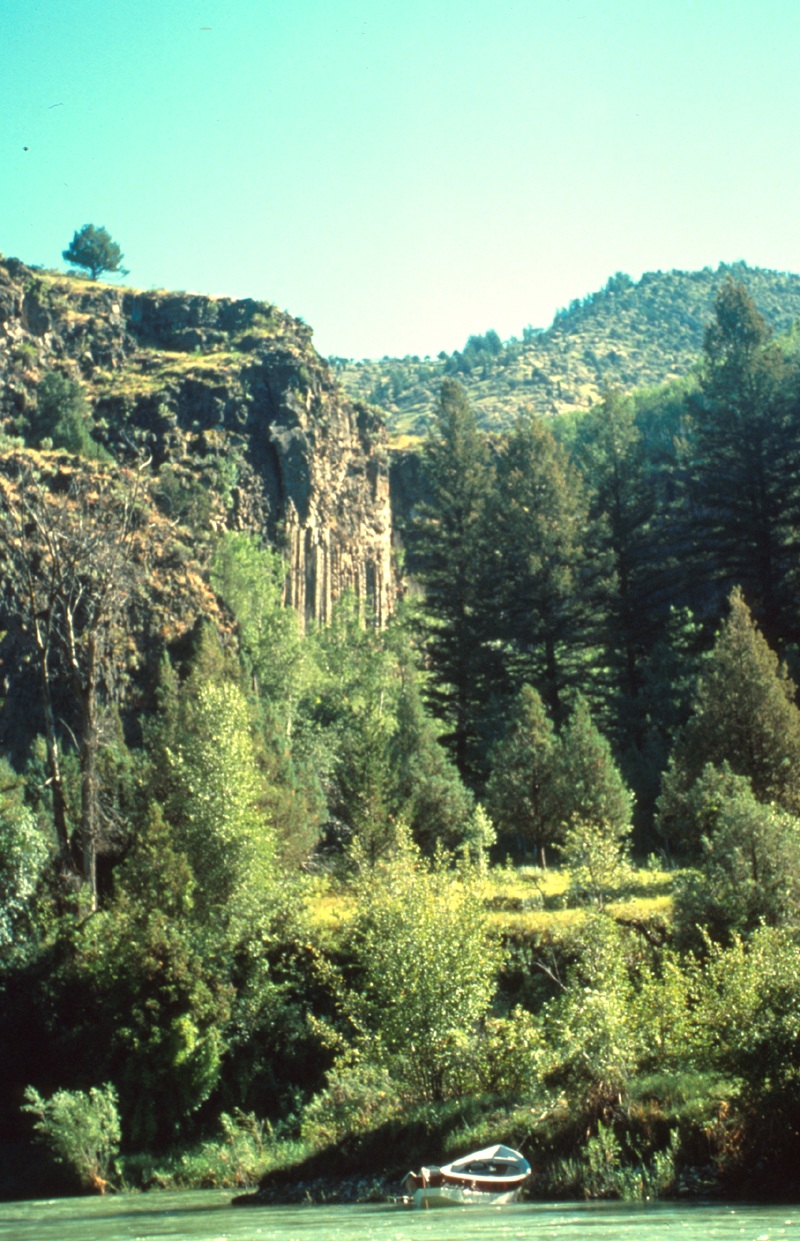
South Fork of the Snake River